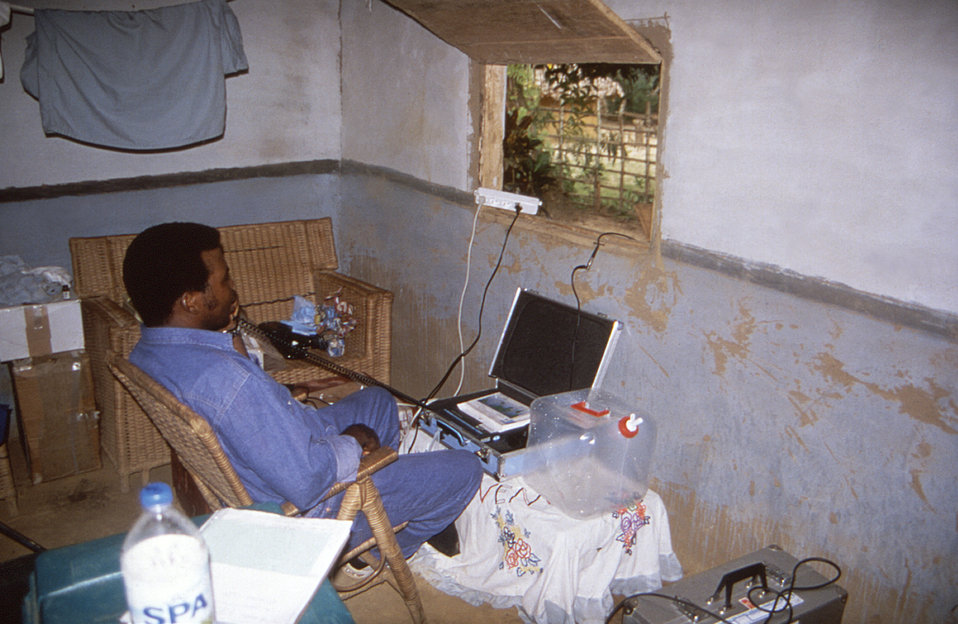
This image was created during an investigation into an outbreak of monkeypox, which took place in the Democratic Republic of the Congo (DRC), 1996 to 1997, formerly Zaire. Pictured here, was the team Chief, World Health Organization (WHO) epidemiologist, Dr. Florimont K. Tshioko, as he was communicating information over a satellite-powered phone, while in the den of the team's hut.